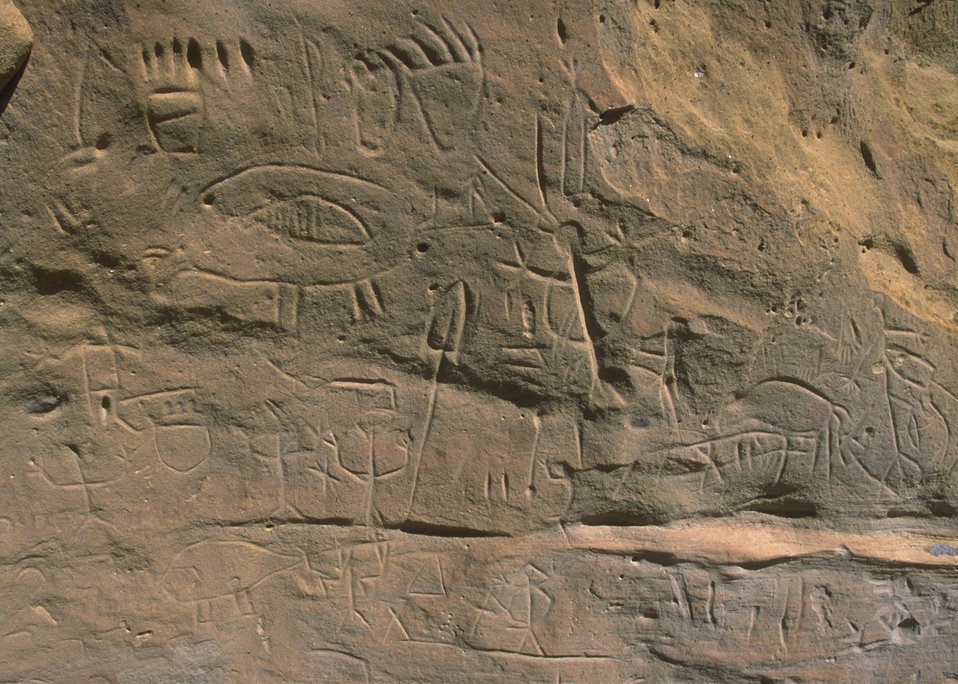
White Mountain Petroglyphs, Rock Springs Field Office.